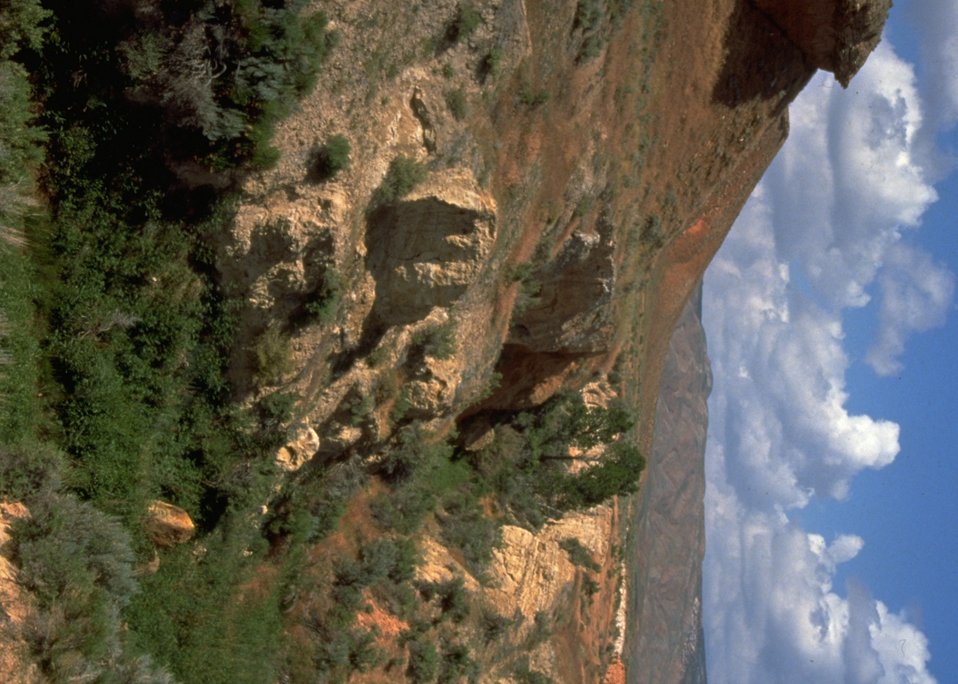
Scenic river site.